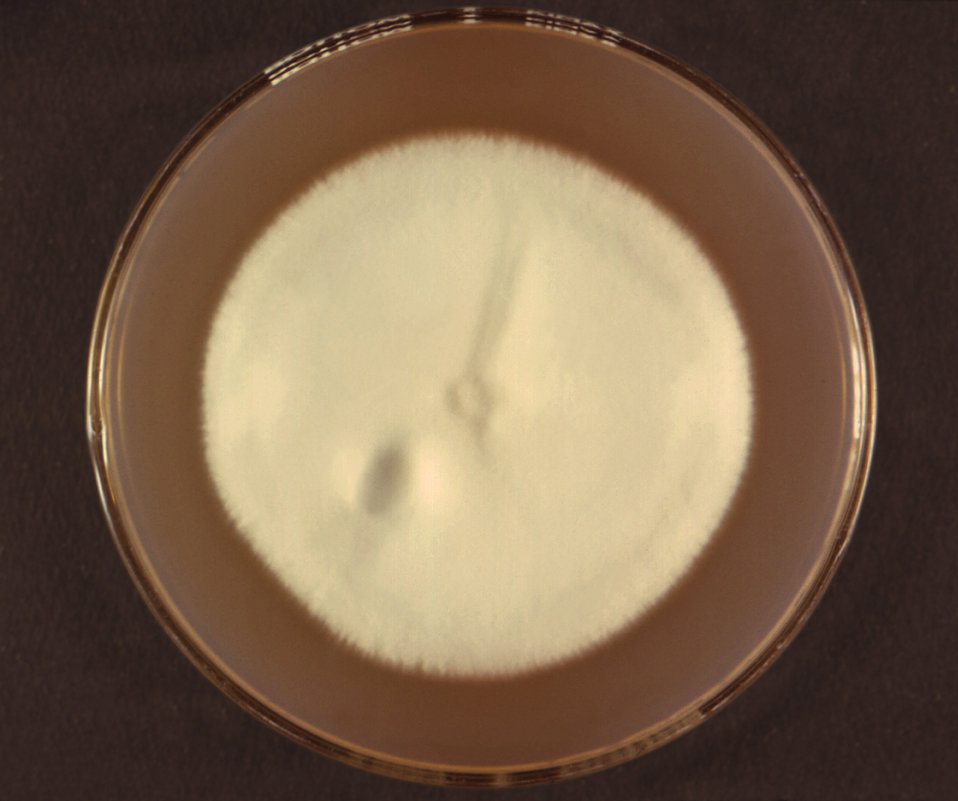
This image depicts a view from the front of a Petri dish culture in which was growing the teleomorph, or end-stage phase, of the fungal organism, Trichophyton mentagrophytes. A dermatophytic fungus, this teleomorphic phase is also known as, Arthroderma benhamiae. See PHIL 12658, for a view of this colony from the front.